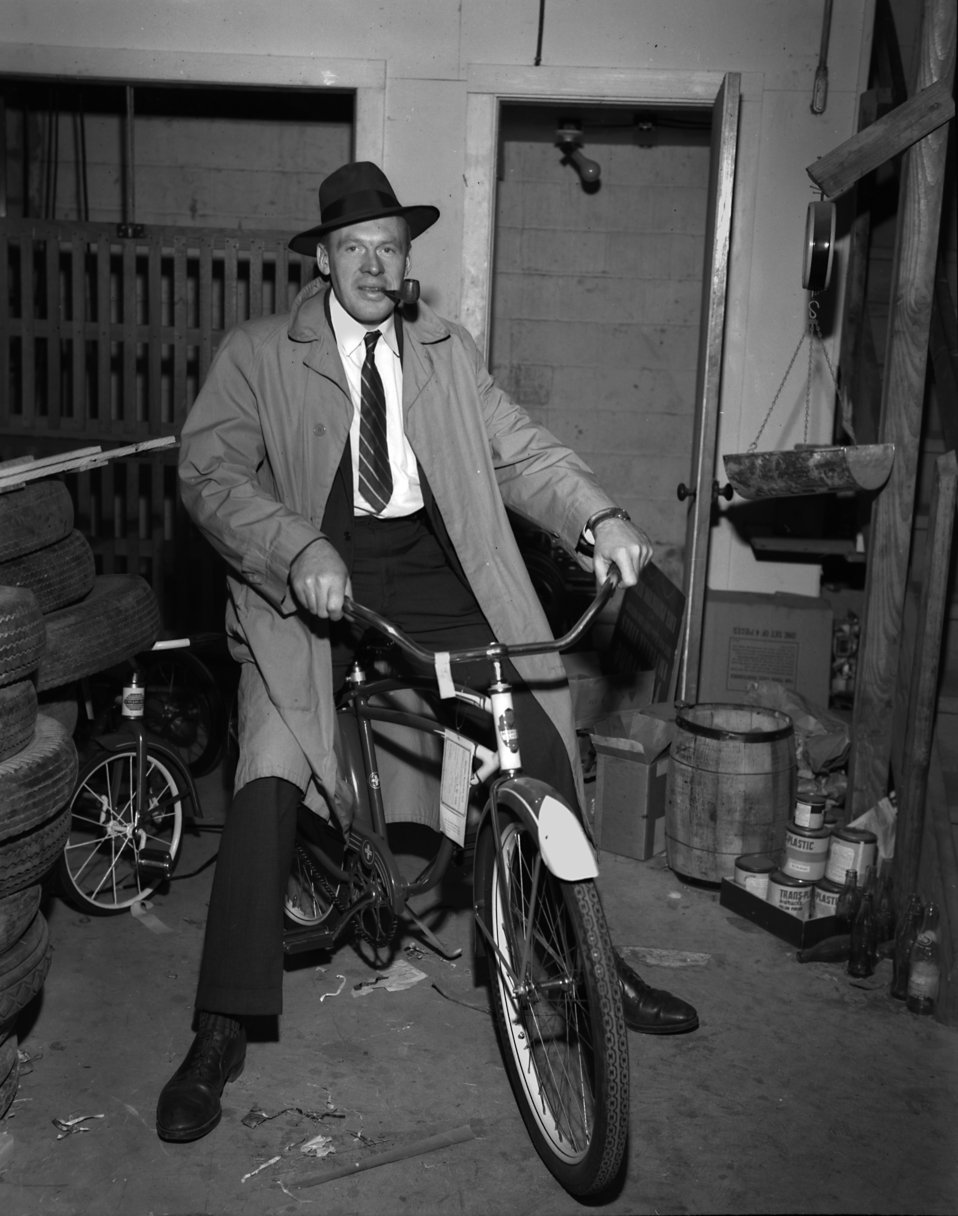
Man on a Bicycle

004058-2 DOE photo by Ed Westcott

Oak Ridge Tennessee 12-5-1947